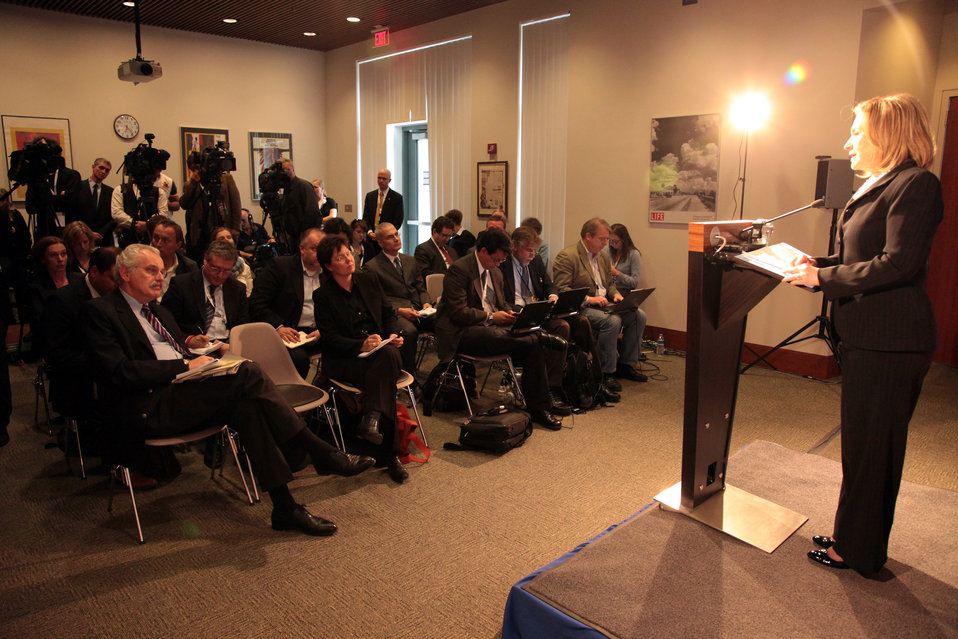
Secretary Clinton Addresses Reporters

U.S. Secretary of State Hillary Rodham Clinton addresses reporters at a press conference at the U.S. Embassy in Berlin, Germany, on April 15, 2011.